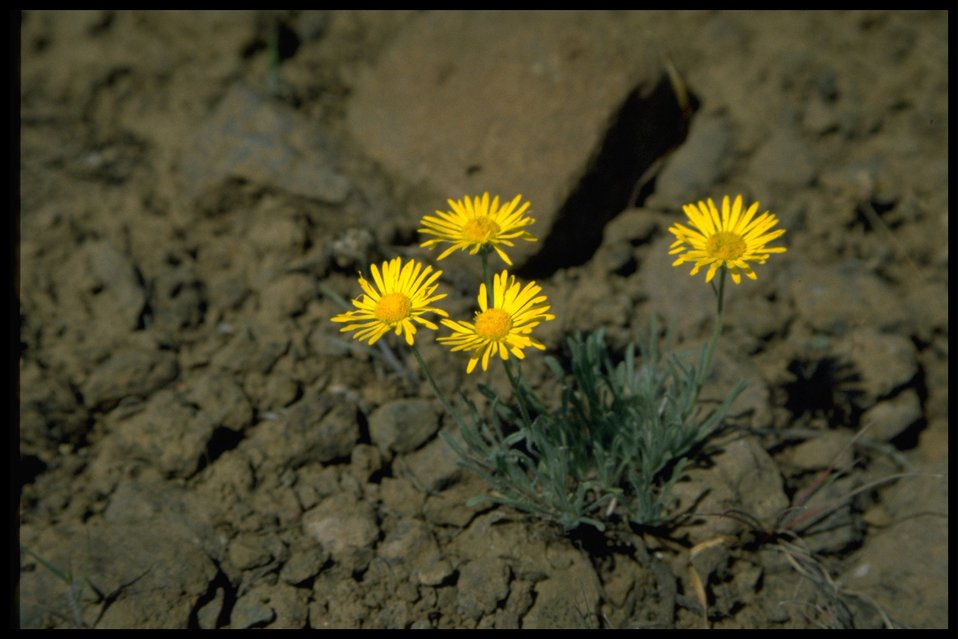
Medium shot of Line-leaf Fleabane wildflowers.